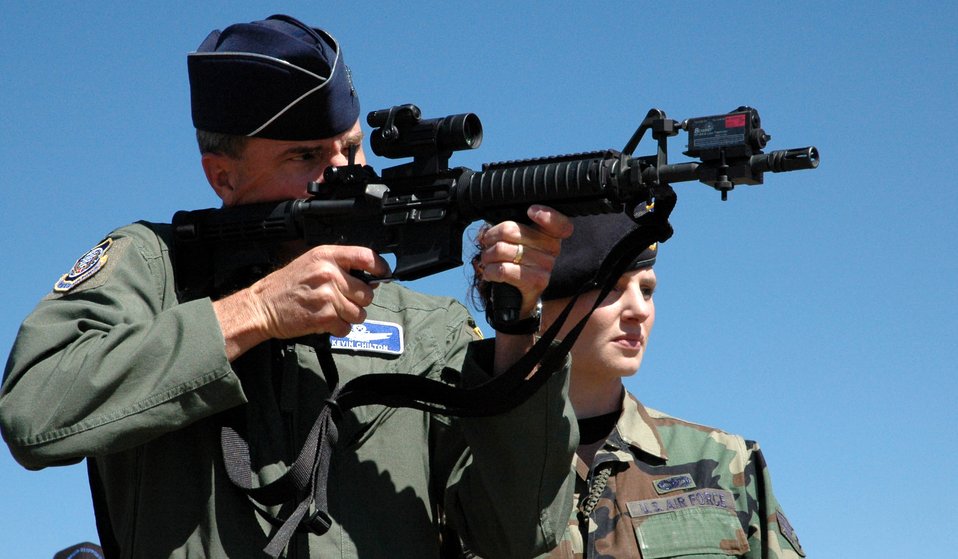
Take your best shot

Gen. Kevin P. Chilton takes a practice shot using the Beam Hit computer system at the Peterson Air Force Base, Colo., weapons course, as Senior Airman Sherry Latham, stands by to assist. Security forces members briefed the general Sept. 19 on the weapons Airmen train with for deployment. General Chilton is commander of Air Force Space Command. Airman Latham is a unit trainer for the 21st Security Forces Squadron.